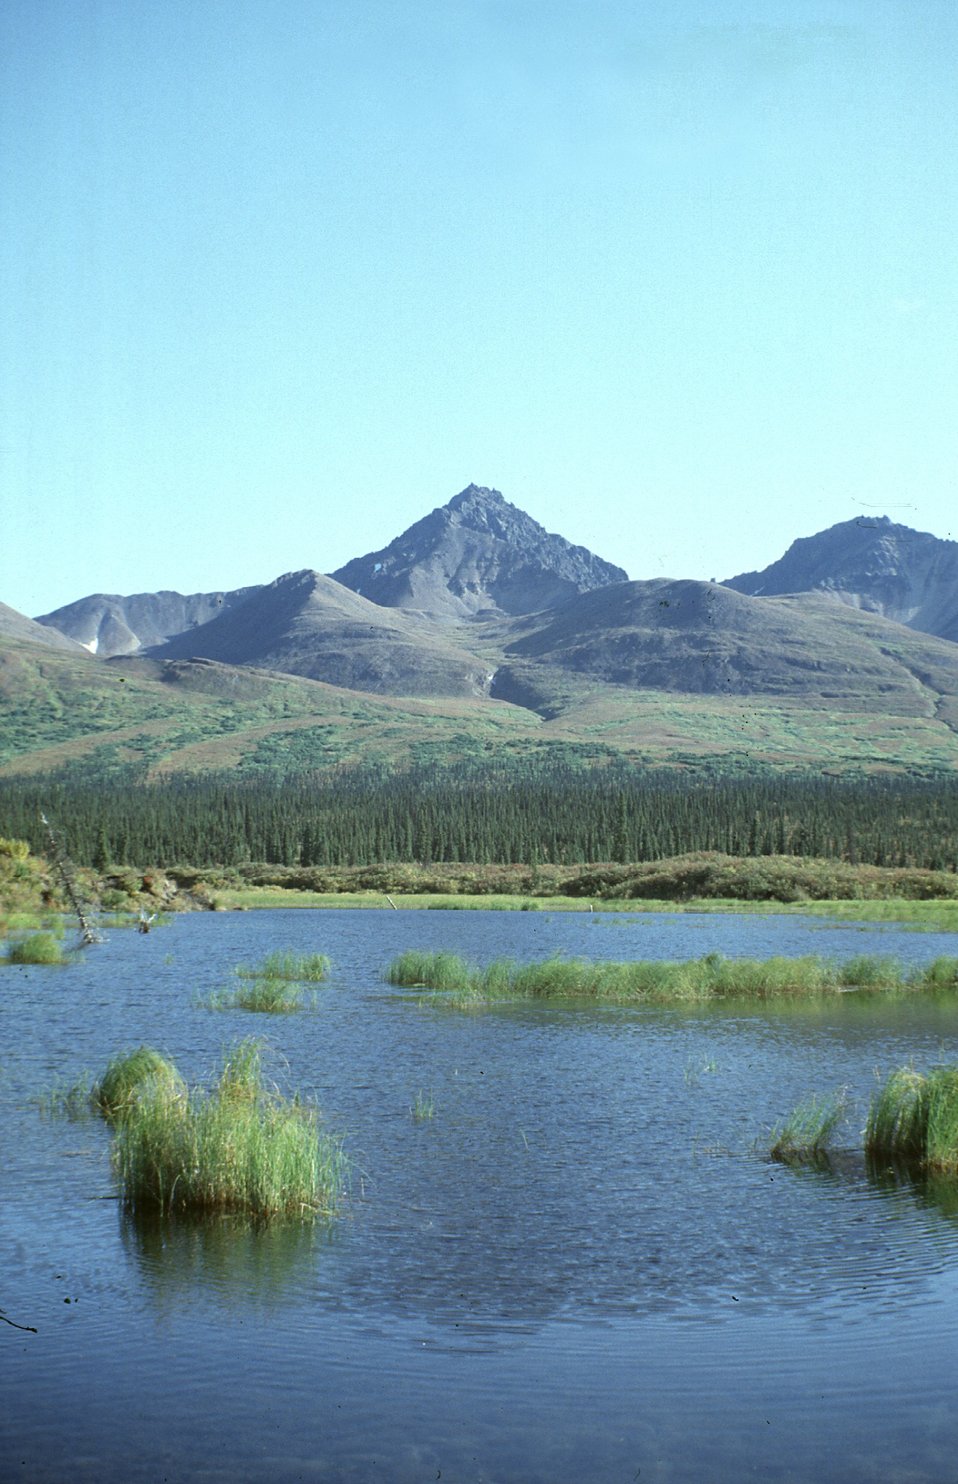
Denali Highway, Alaska